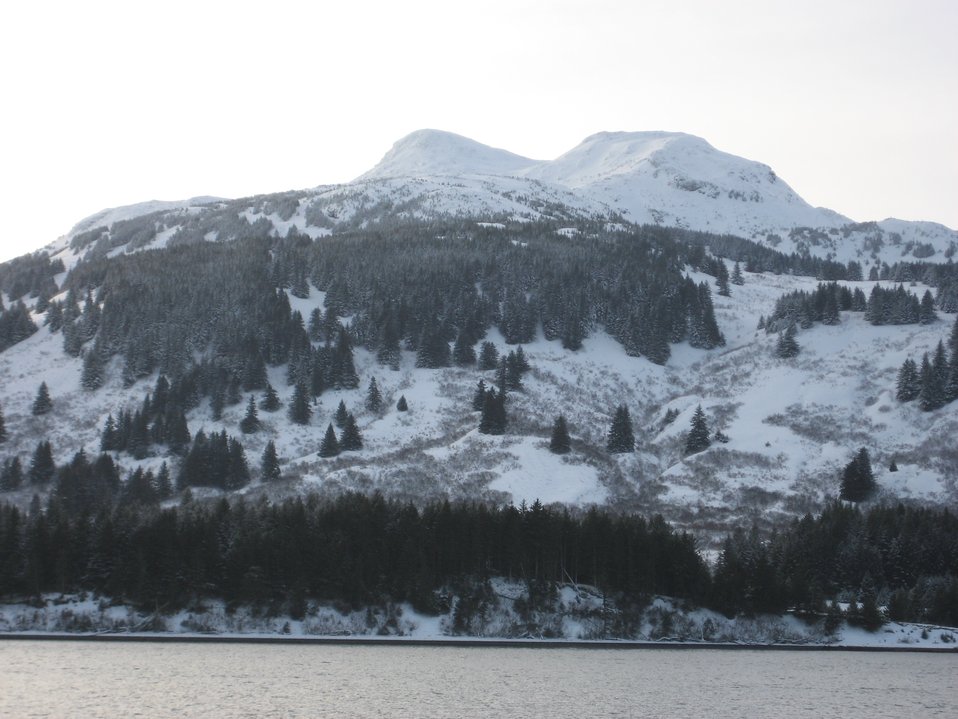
A winter scene along the Inside Passage.